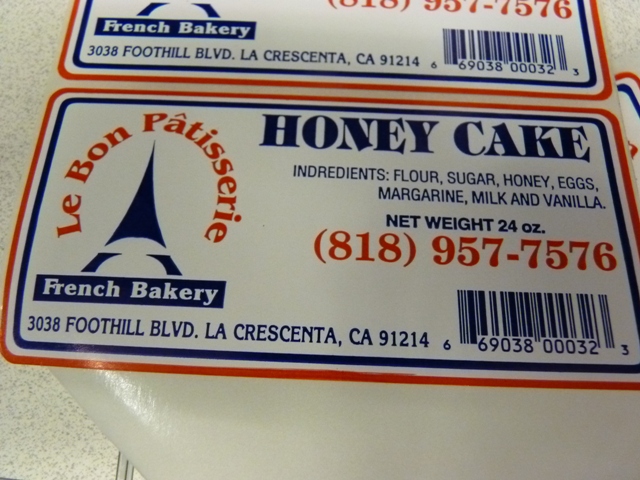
RECALLED - Pastry Products

April 5, 2011 – Product Recall – Le Bon Patissiere-2, Inc. Announces Voluntary Recall On Select Le Bon Patissiere Products That Contain Undeclared Allergens.